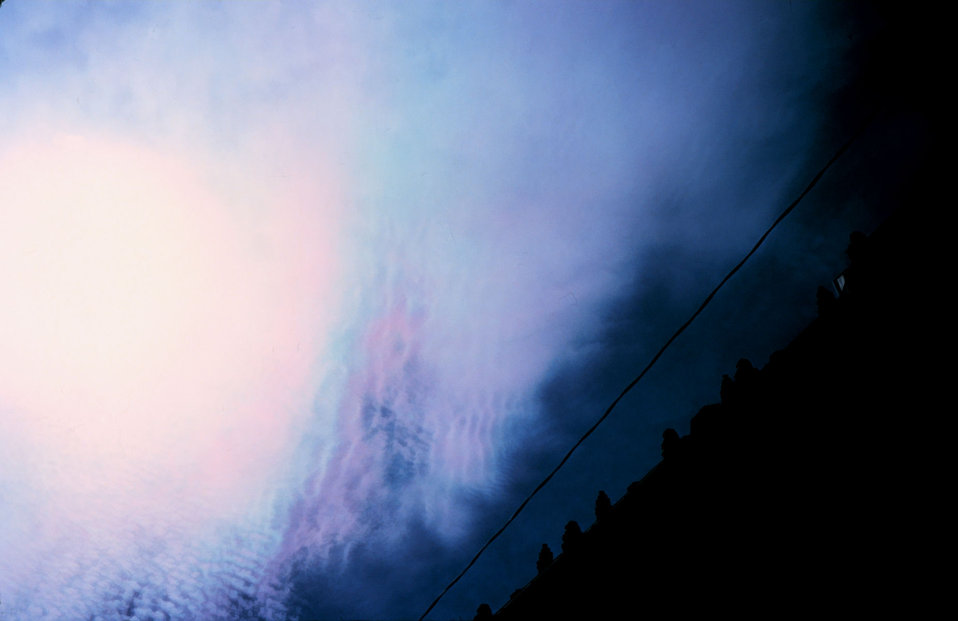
Irisation or iridescence in super-cooled cloud droplets in cirrocumulus